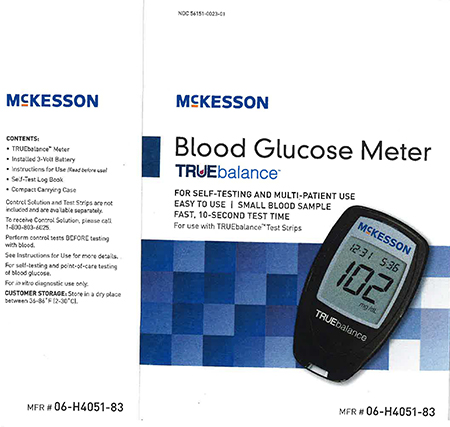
RECALLED – Blood Glucose Meters

January 2, 2014 – Product Recall – Nipro Diagnostics, Inc. Initiates Voluntary Recall of Certain TRUEbalance and TRUEtrack Blood Glucose Meters.